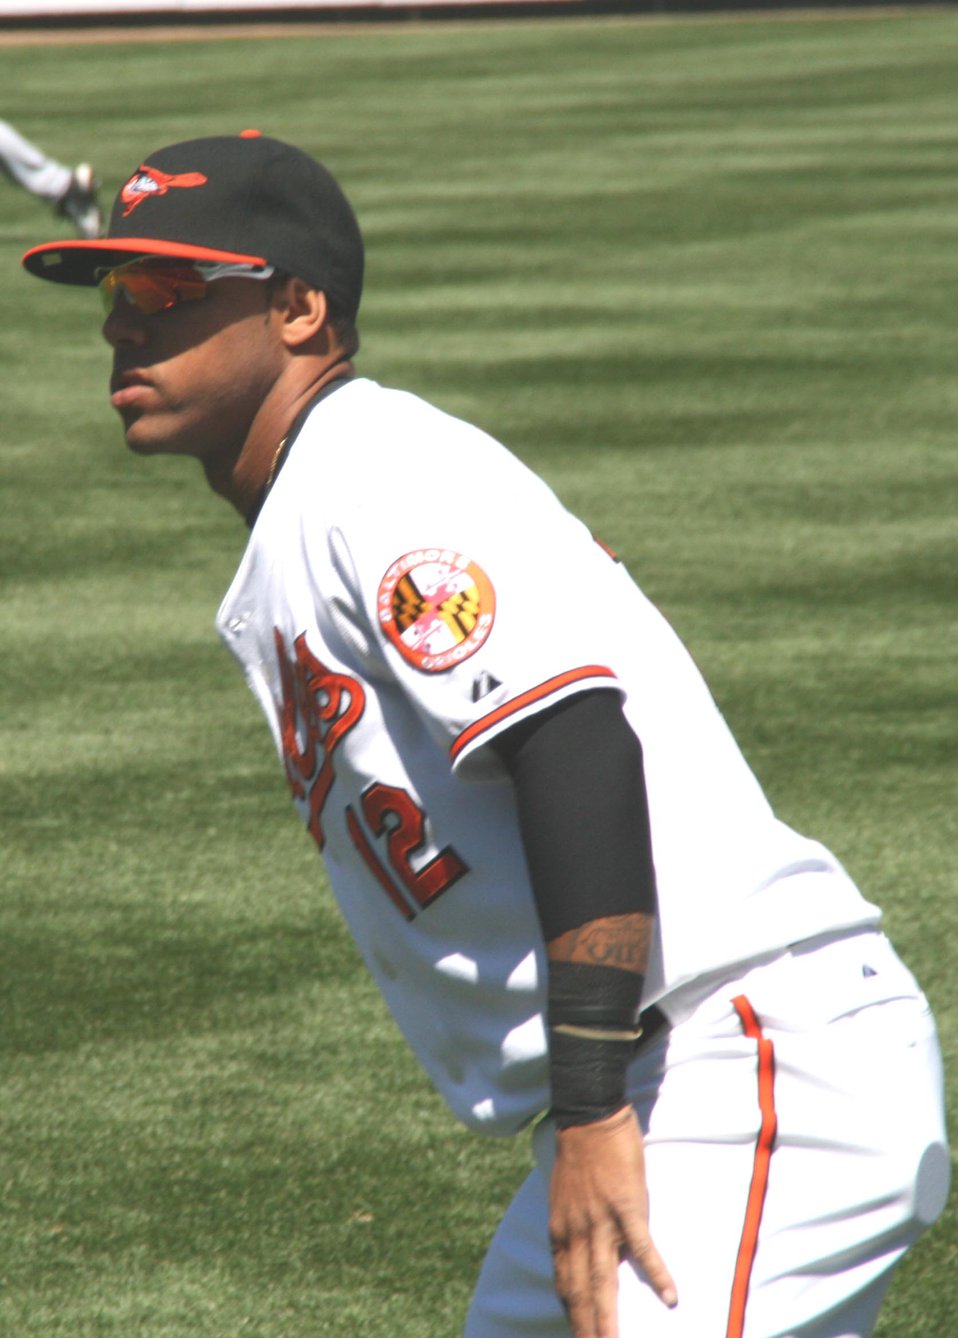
April 12, 2009
21:44, 12 April 2009 . . Marylandstater . . 1,673×2,336 (222 KB)